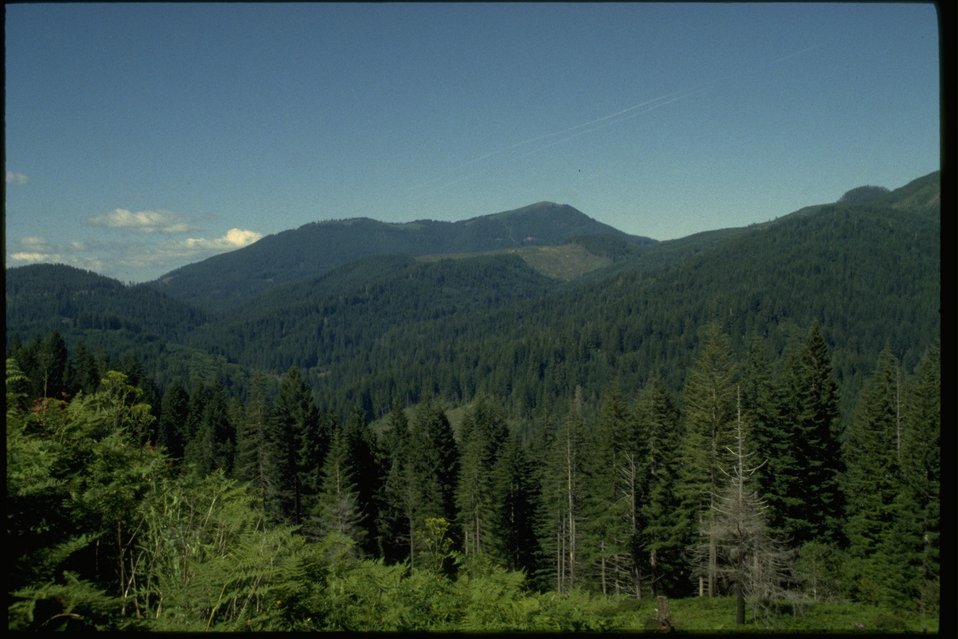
A scenic view of forest lands in a mountainous landscape.